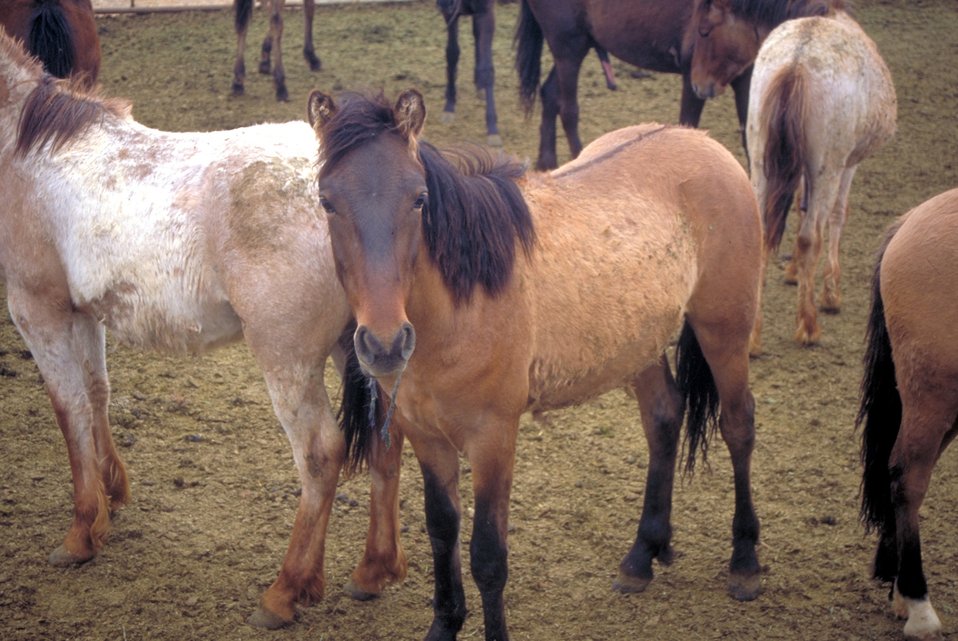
Holding pen near Vernal, Utah.